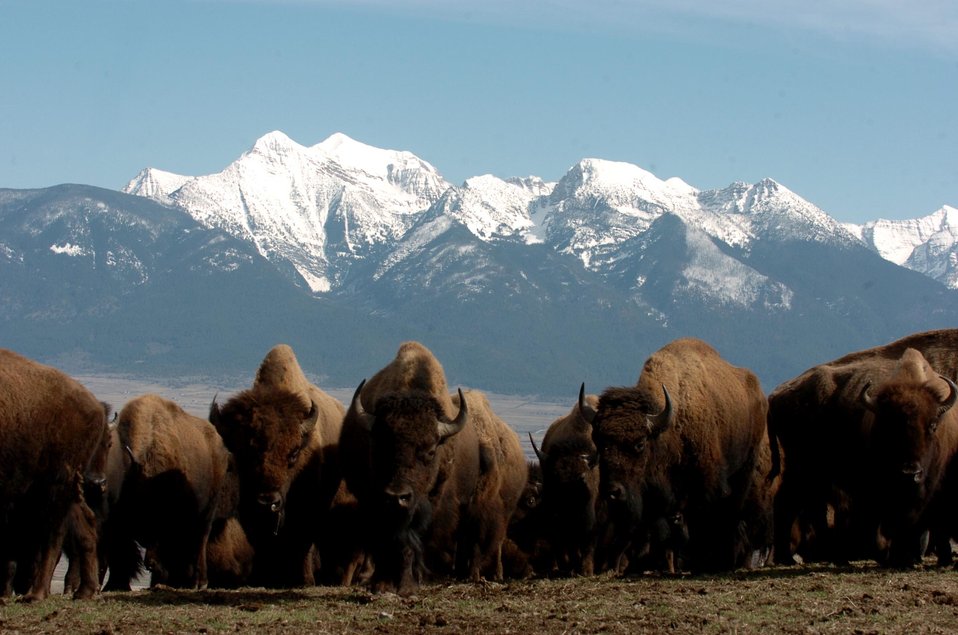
Herd of Bison

Bison on the National Bison Range in Montana.